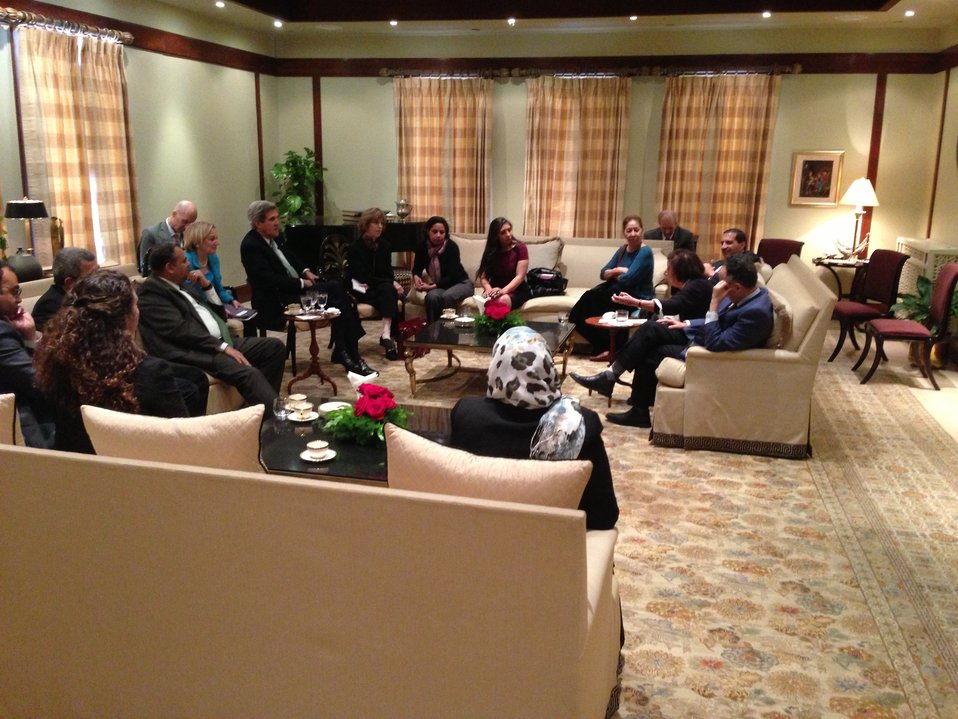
Secretary Kerry Meets With Civil Society Leaders in Egypt

U.S. Secretary of State John Kerry meets with civil society leaders in Cairo, Egypt, on March 3, 2013.